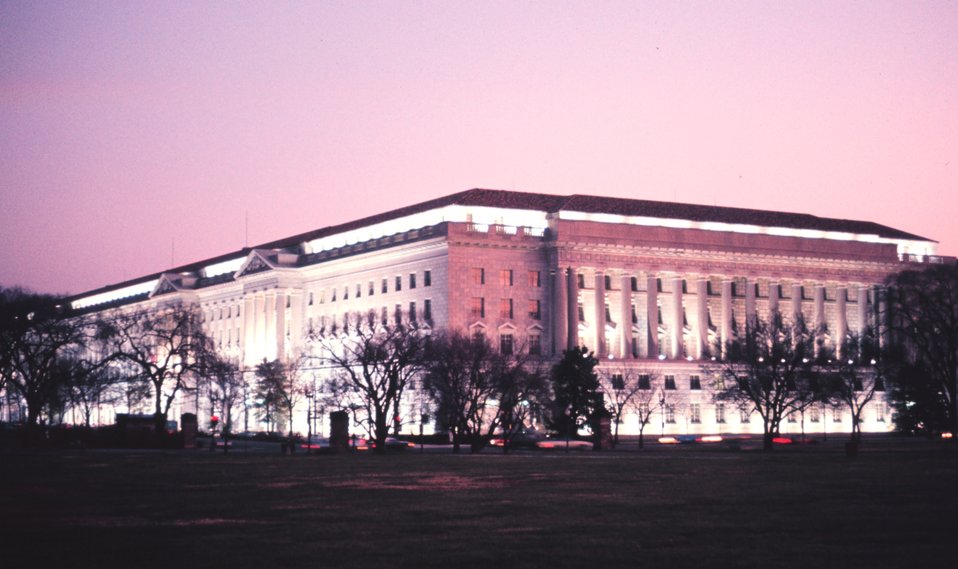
The Herbert Clark Hoover Building, home to the U. S. Department of Commerce, The Herbert Clark Hoover Building, home to the U. S. Department of Commerce,